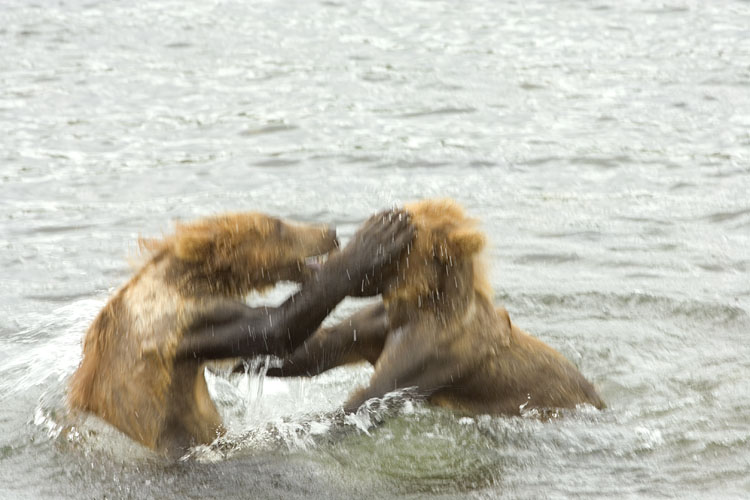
Kodiak Brown Bears

Playful Kodiak Bears